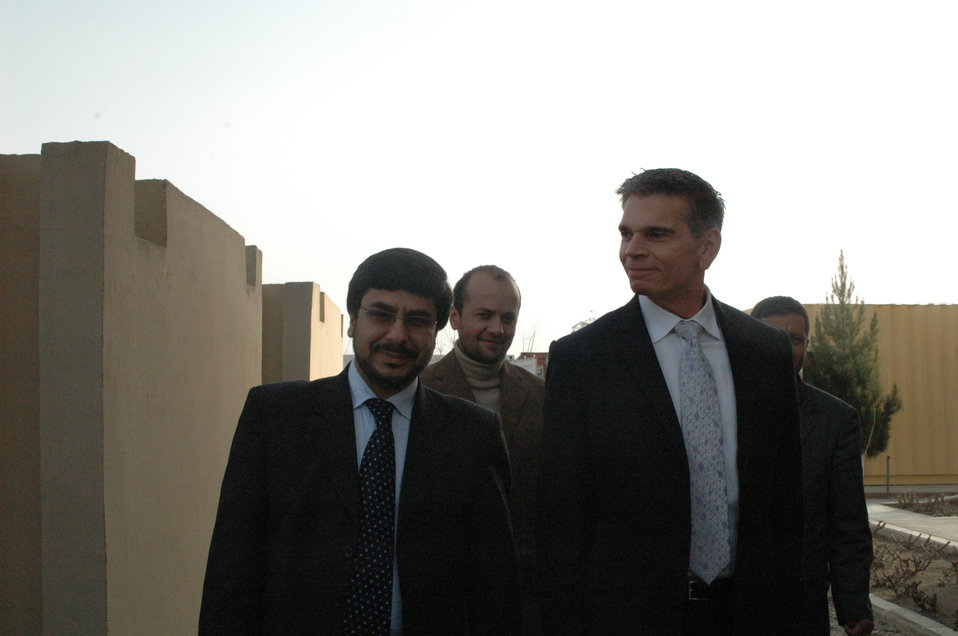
Community Based Stabilization Grants Ceremony, December 7, 2010